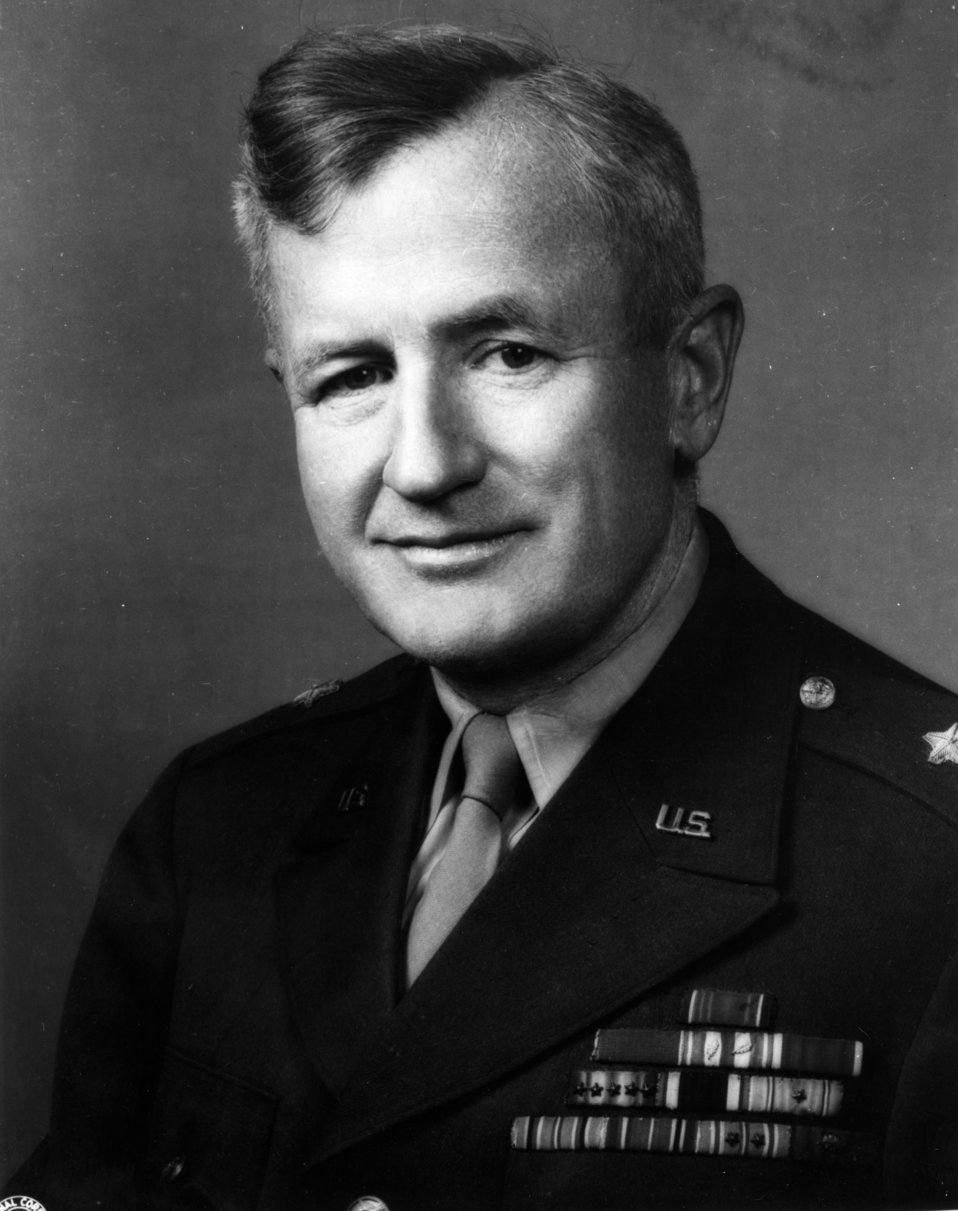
Notable persons at Oak Ridge